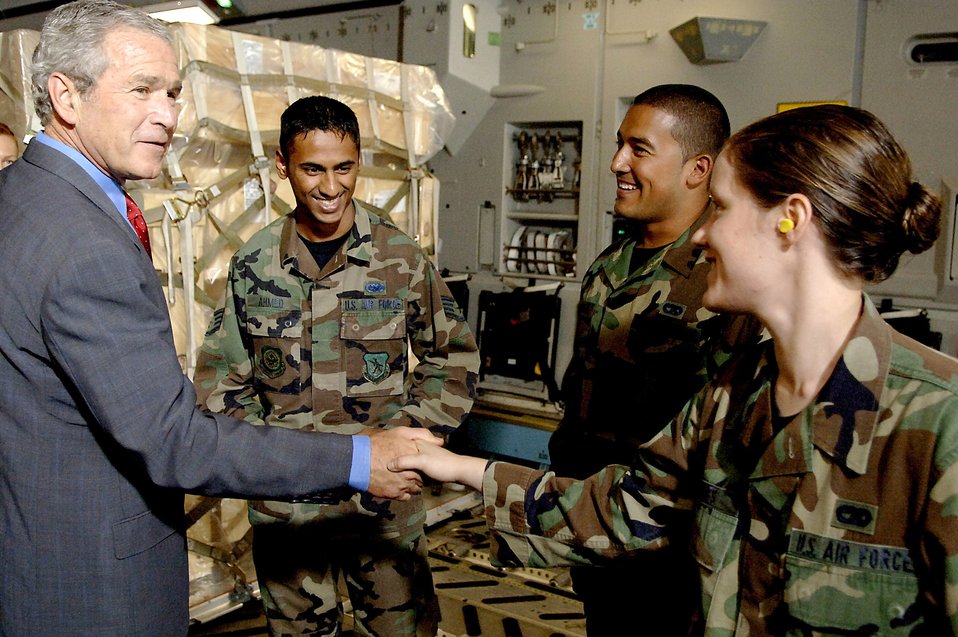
President visits Charleston, addresses military members

President George W. Bush shakes hands with Senior Airman Shannon Jones in a C-17 Globemaster III July 24 on the Charleston Air Force Base flightline in South Carolina. President Bush visited Charleston AFB, took a tour of a static C-17 Globemaster III, ate lunch with Airmen from the base and talked about the war on terrorism. Airman Jones is a 437th Aerial Port Squadron cargo processor.